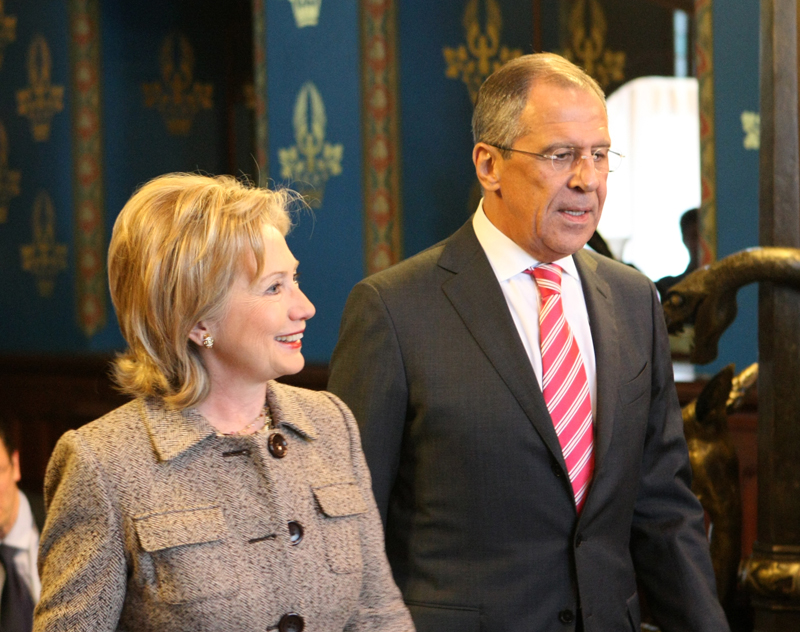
Secretary Clinton With Russian Foreign Minister Sergey Lavrov

U.S. Secretary of State Hillary Rodham Clinton walks with Russian Foreign Minister Sergey Lavrov before their talks in Moscow, Russia March 18, 2010.